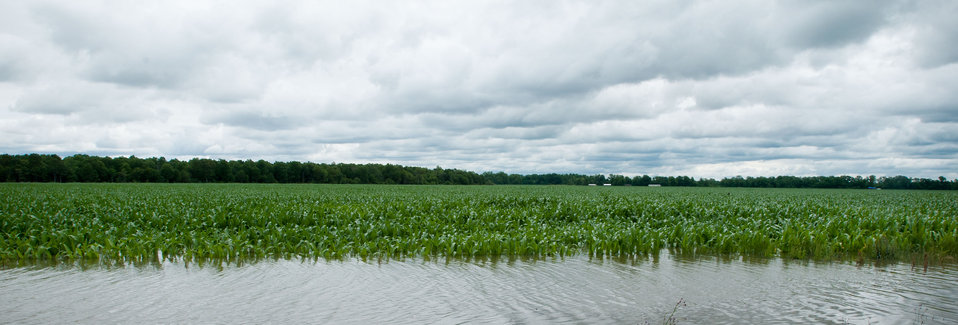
Mississippi River floodwaters have pushed into Yazoo River and into this cornfield near Yazoo City, MS, on Monday, May 16. 2011.